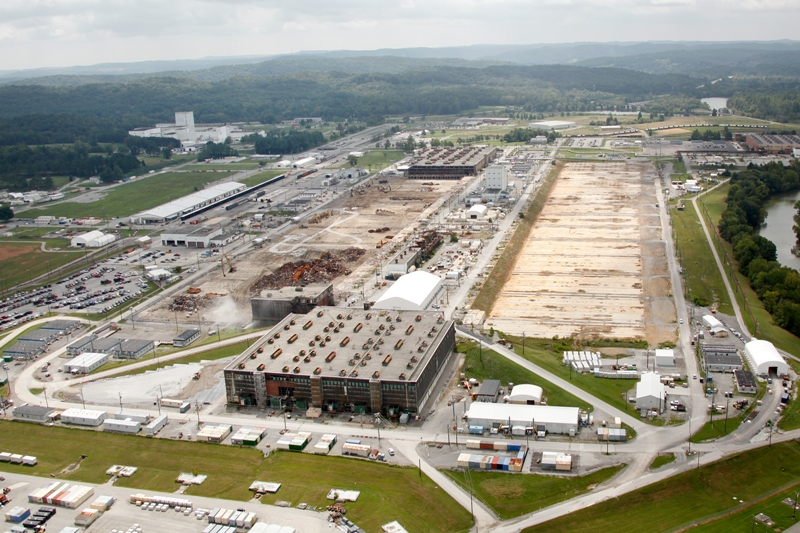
K-25

September, 2012

Sept. 2012, workers take down the non-technetium contaminated portion of K-25’s east wing. Demolition begins next month on the North Tower (bottom) as teams continue prepping the remainder of the east wing for demolition.